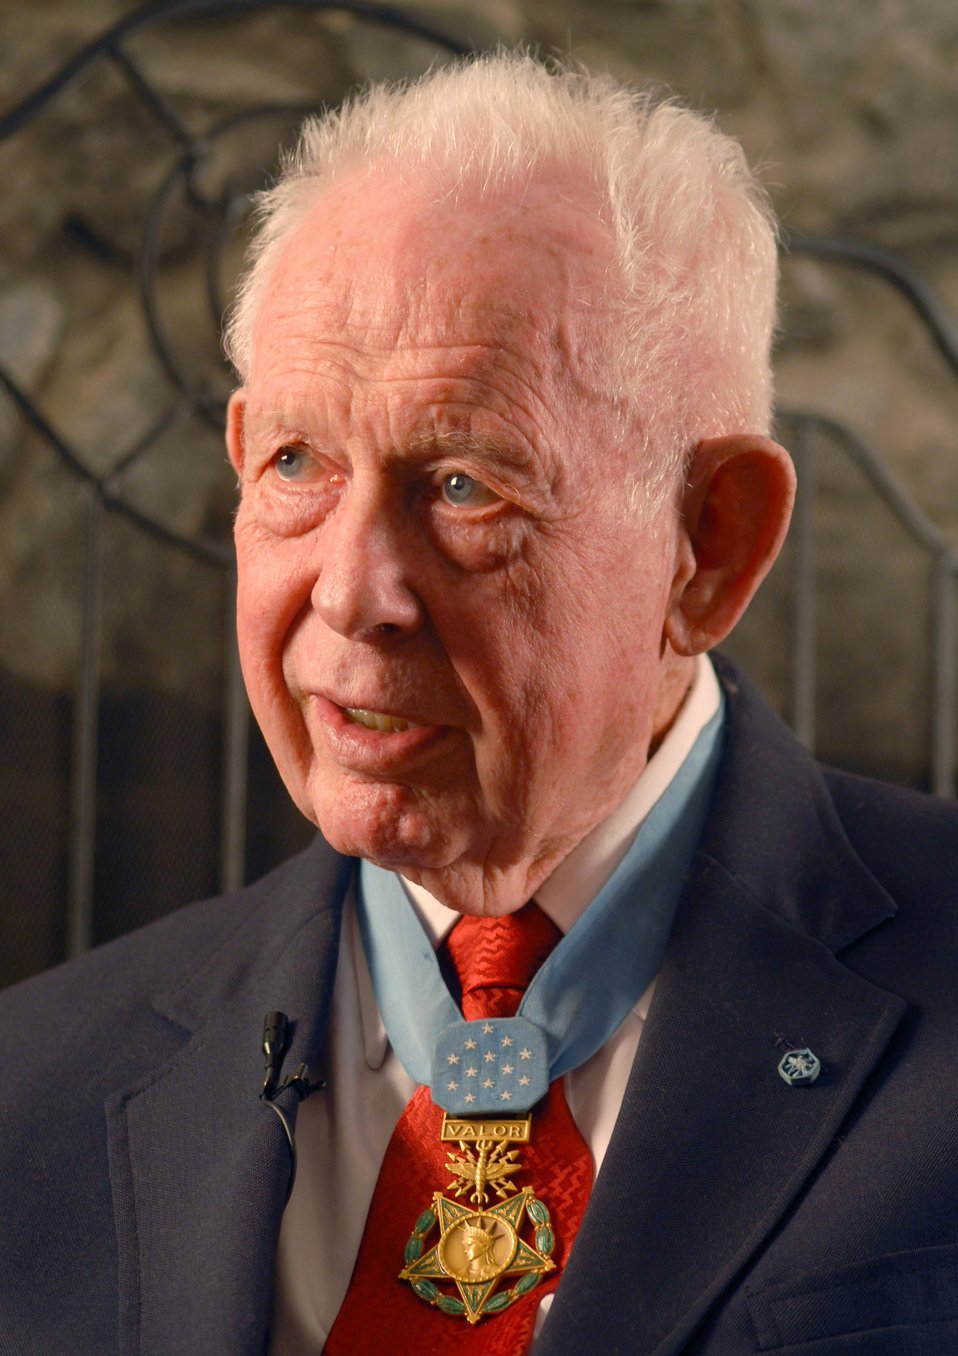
A true hero

Medal of Honor recipient, retired Col. Bernard F. Fisher, answers questions during an interview Feb 26 at Kunsan Air Base, South Korea. Colonel Fisher was the first living Air Force member to receive the Medal of Honor. Colonel Fisher received the Medal of Honor for heroism during the Vietnam War.